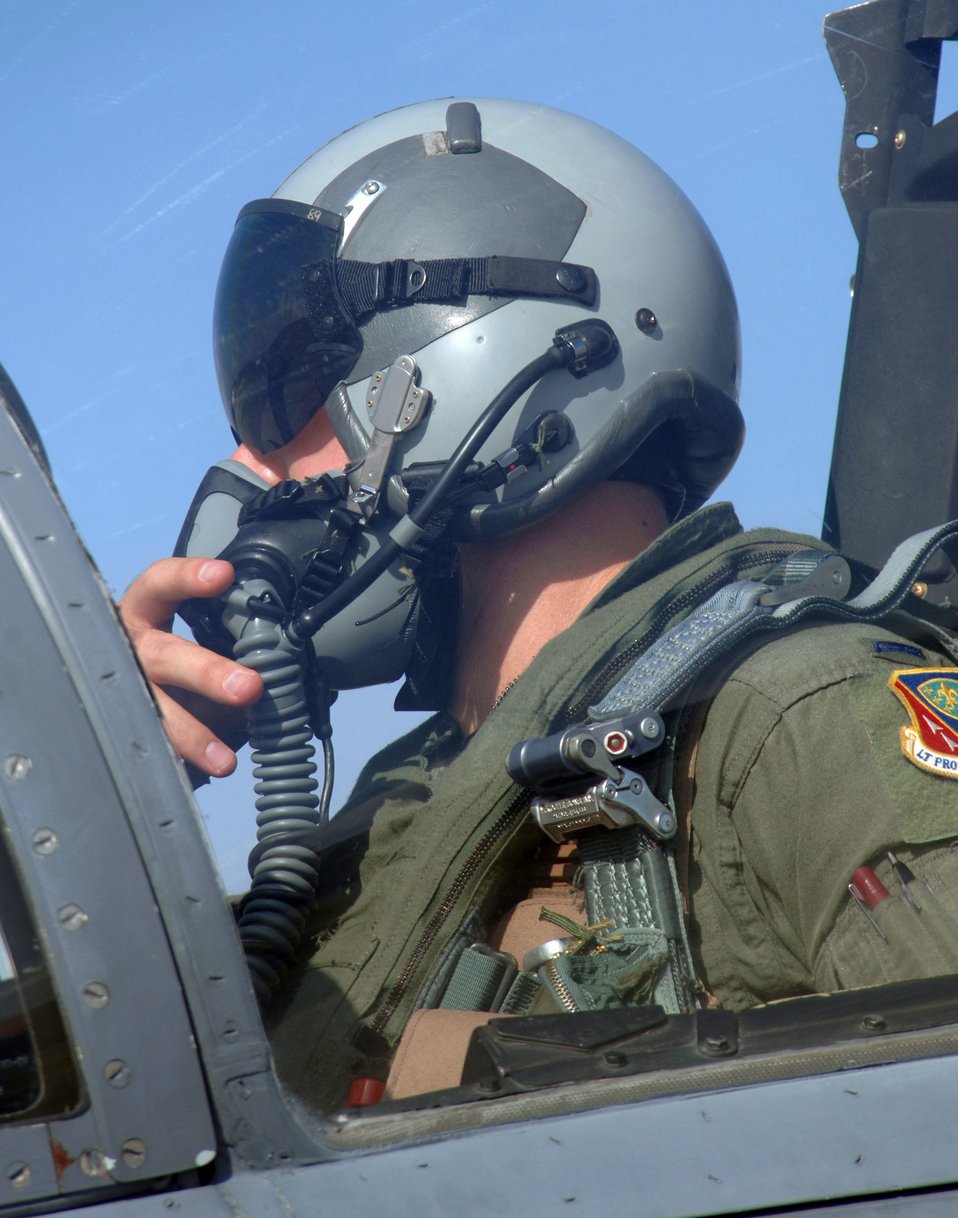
Airmen support PACAF operations while deployed

KADENA AIR BASE, Japan -- First Lt. Andy Rollins prepares to taxi out for a mission. About 300 Airmen from Mountain Home Air Force Base, Idaho, are here supporting U.S. Pacific Command operations as part of an air and space expeditionary force tasking. Lieutenant Rollins is an F-15E Strike Eagle pilot with the 391st Expeditionary Fighter Squadron.